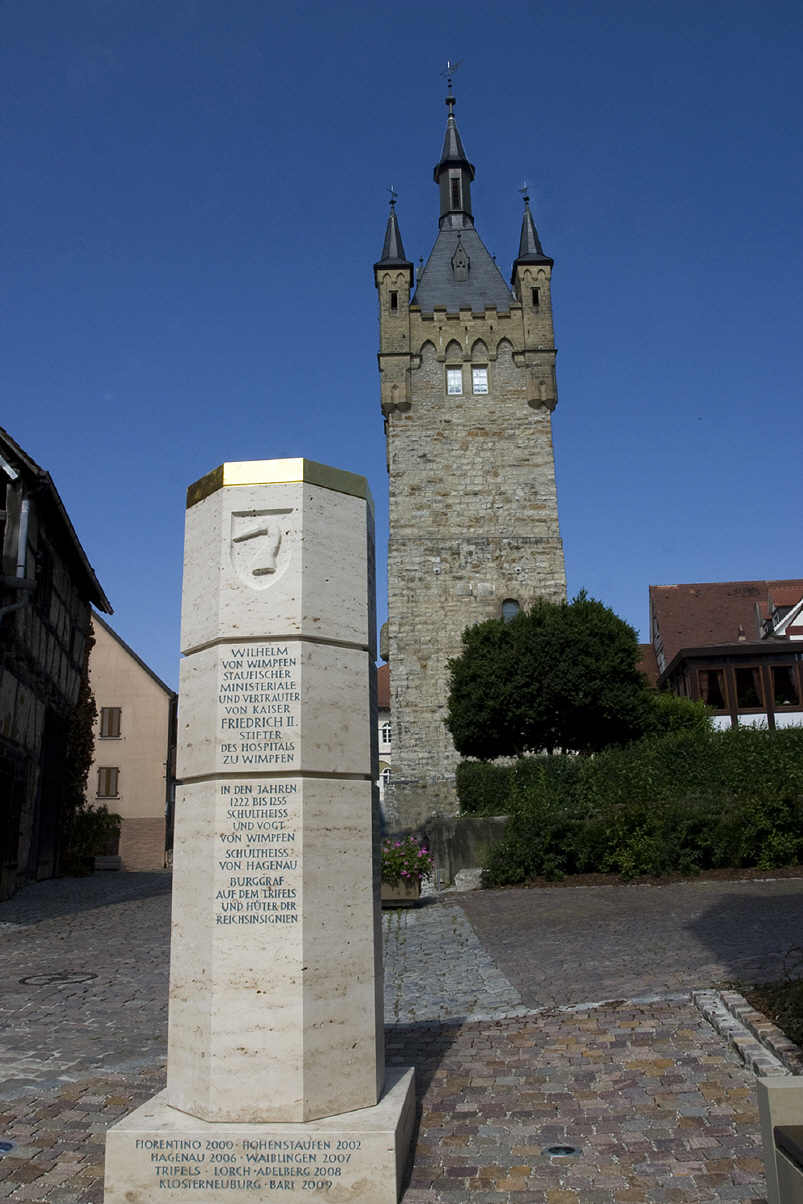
Deutsch: Bad Wimpfen - Stauferstele am Steinhaus zwischen dem Blauen Turm und dem Roten Turm